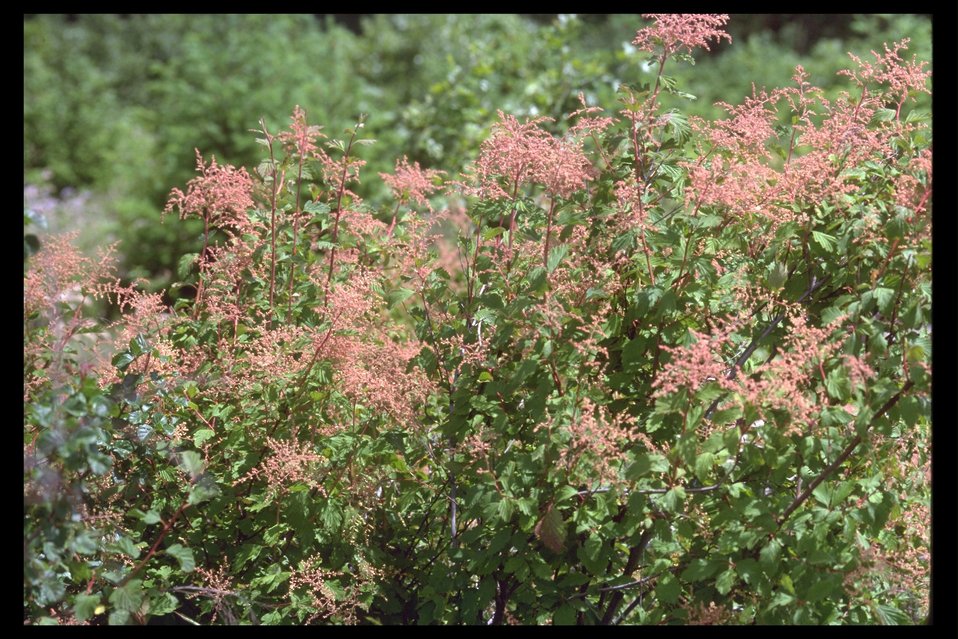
Oceanspray (Holodiscus discolor) at Upper Trail Creek.